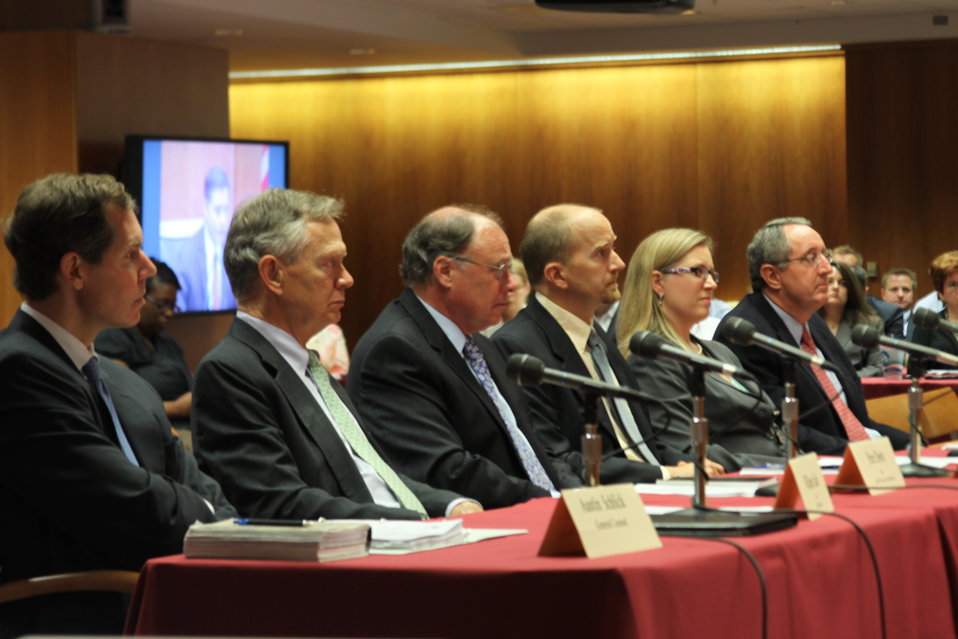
7/12/2011 Open Commission Meeting

The Media Bureau's remarks regarding Low Power Radio Service at the July 2011 Open Commission Meeting